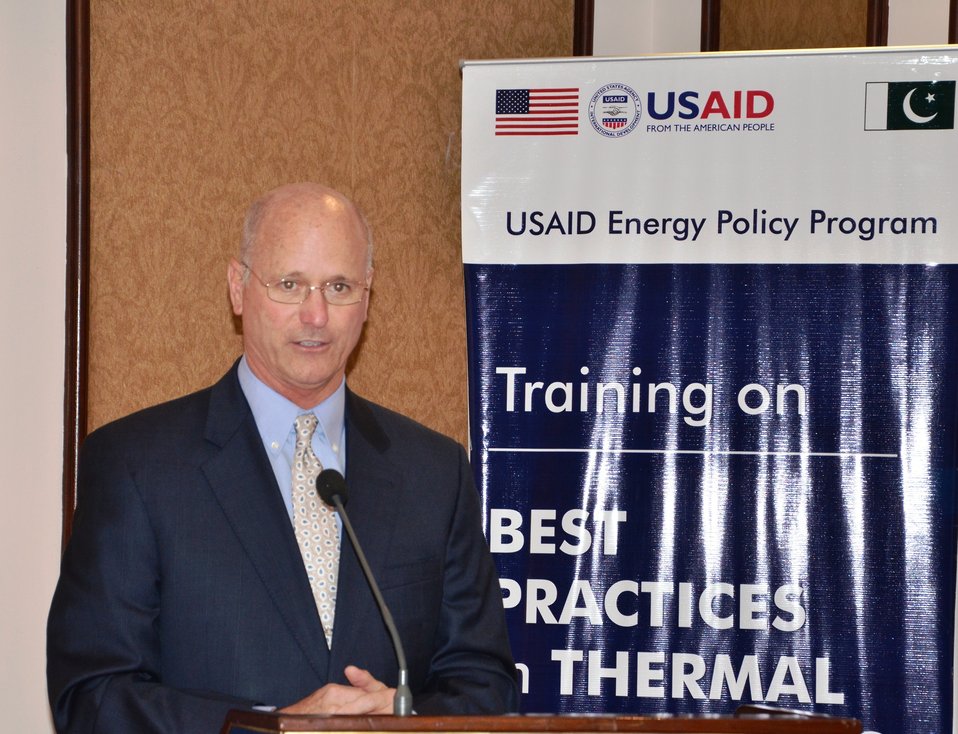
Tim Moore, Acting Director USAID Energy Office addressing the ceremony